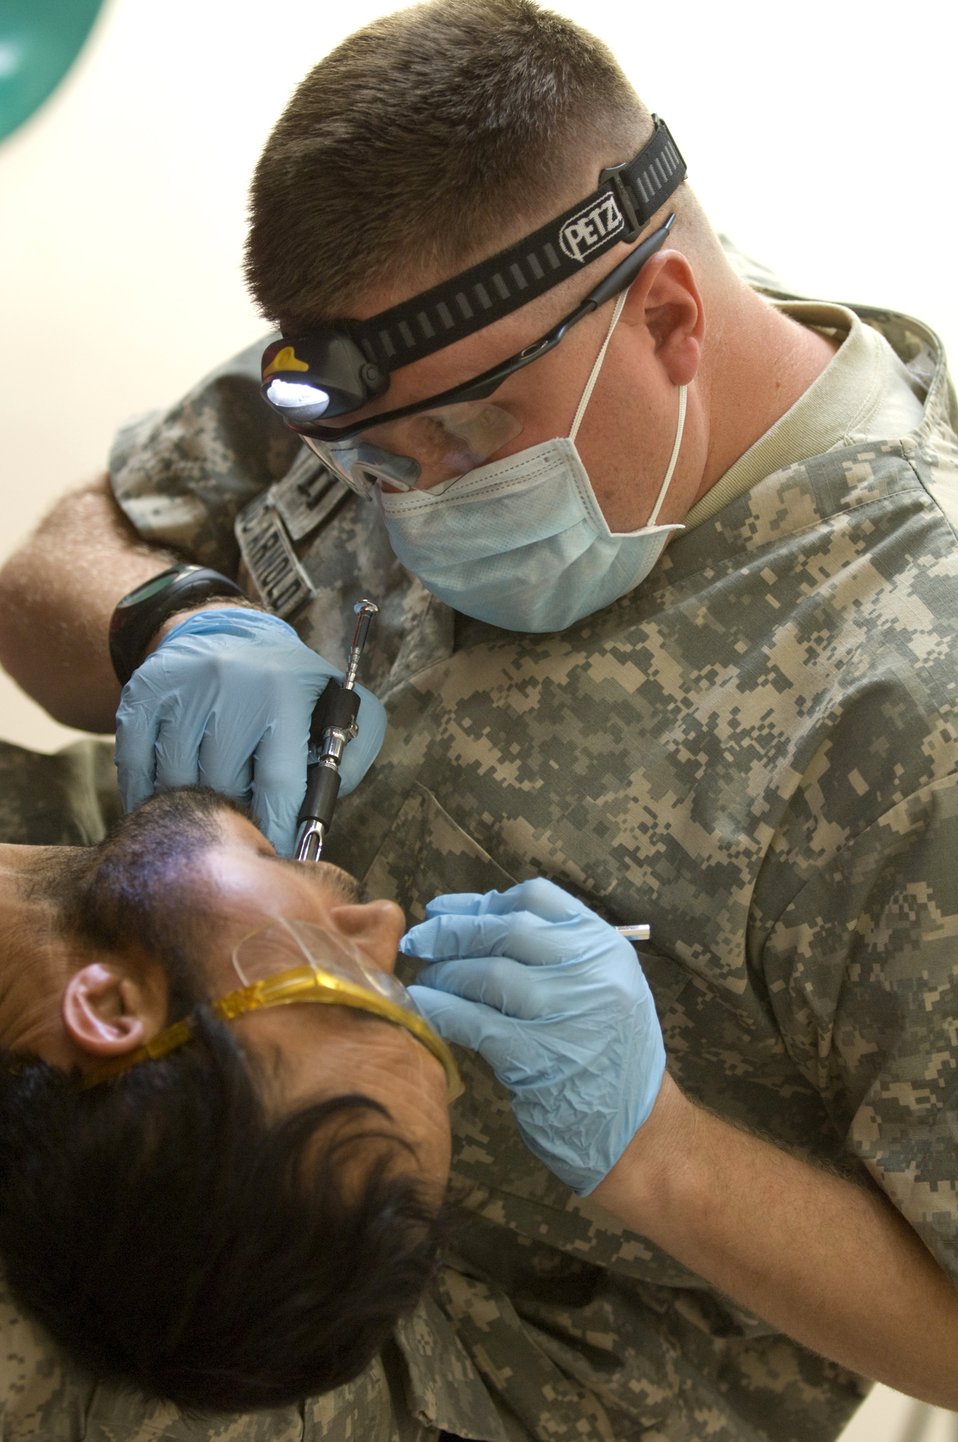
Servicemembers provide dental training for Afghans

Capt. (Dr.) James Arnold injects an Afghan patient with novocain at a village dental outreach visit Oct. 11 in Zabul, Afghanistan. Captain Arnold is a Zabul Provincial Reconstruction Team members and a family practice doctor from Andersen Air Force Base, Guam.